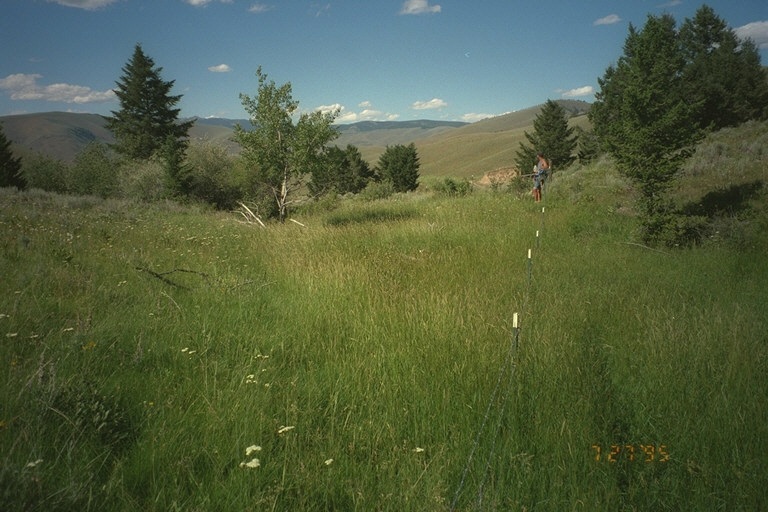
Riparian area Public Lands Salmon Field Office UCSC Upper Columbia Salmon Clearwater District